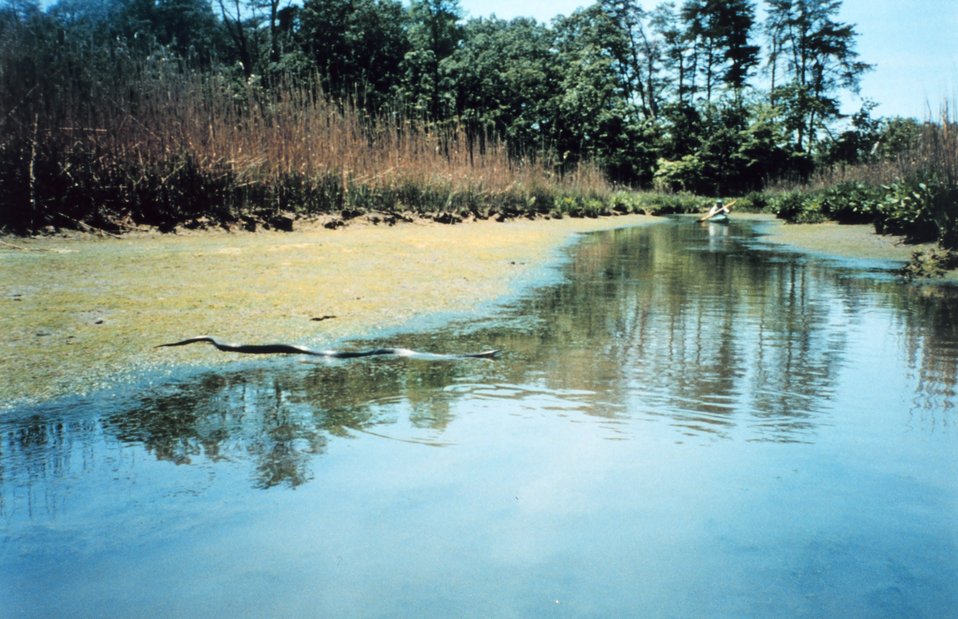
A large black rat snake crossing a tidal inlet in the marsh grass.